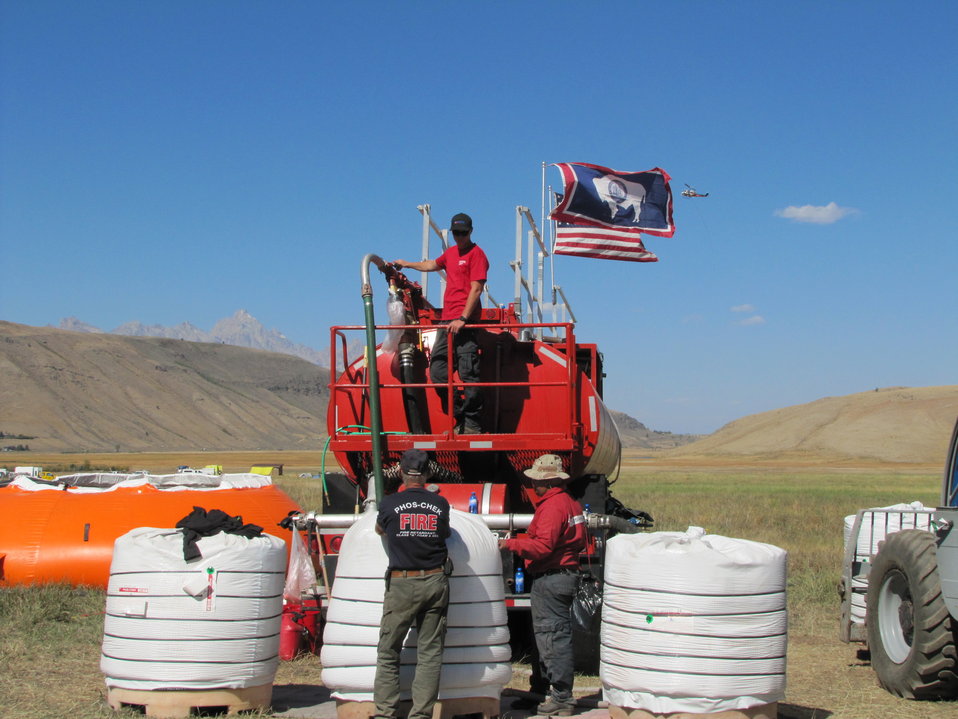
Fire Retardant Mixing Plant Site

White bags holding 2,000 pounds of retardant powder sit next to the red tanker that serves as a temporary mxing plant.